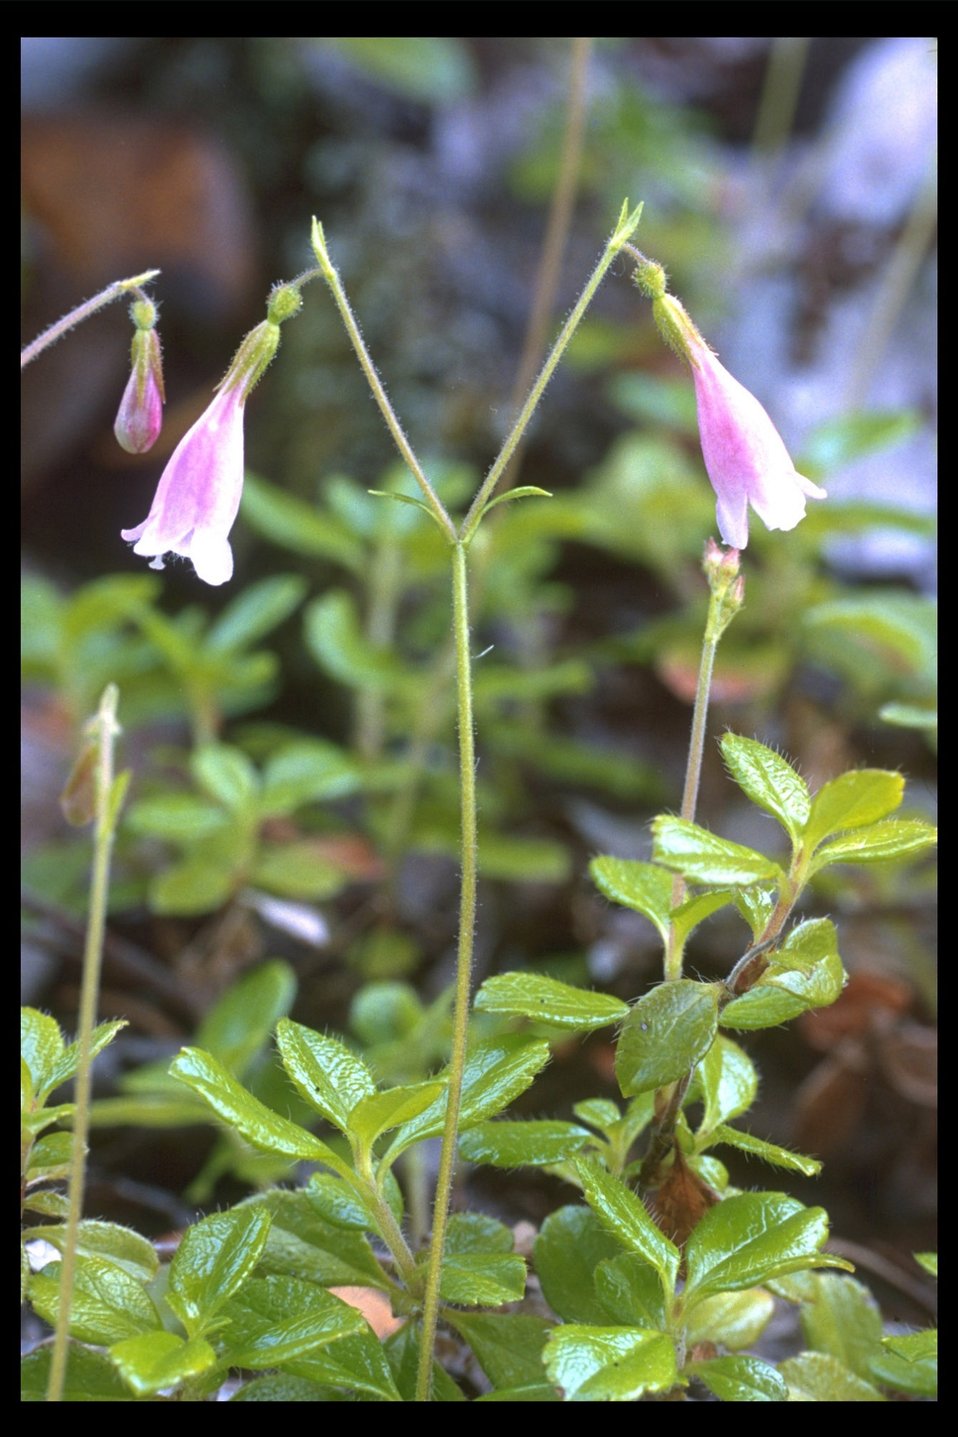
Twinflower (Linnaea borealis) along West Fork Evans Creek.